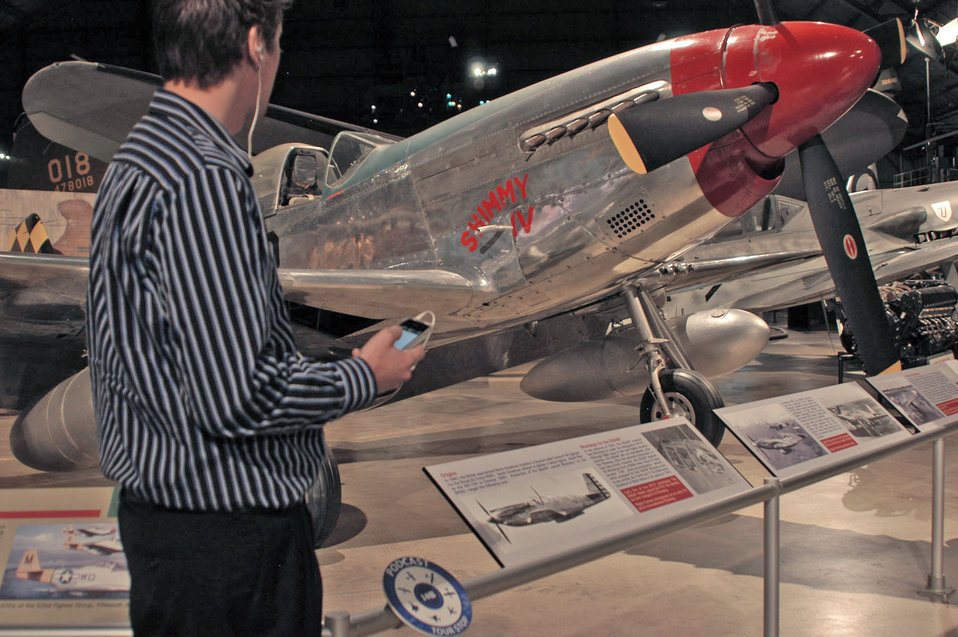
Museum launches virtual tour that can be downloaded to MP3 player

A visitor listens to a museum tour podcast segment at the National Museum of the U.S. Air Force in Dayton, Ohio.